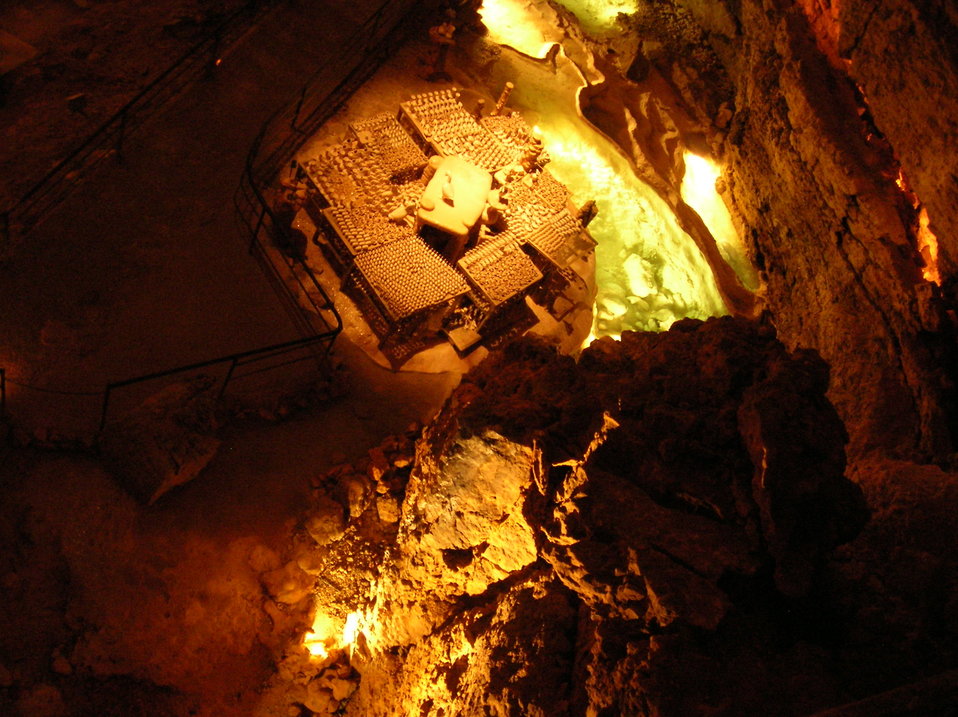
Pottery left in the cave of Proumeyssac (P√©rigord, France) in order to cover them with shiny calcareous deposit. (NB:photo taken without flash in order to respect the place) Fran√ßais†: Poterie laiss√©e dans le gouffre de Proumeyssac (P√©rigord, France) pour les couvrir de d√©p√¥t de calcaire brillant. (NB:photo prise sans flash dans le but de respecter l'endroit)